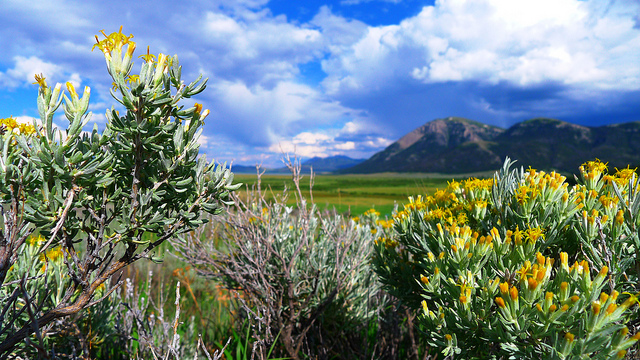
blooming horsebrush

Red Rock Lakes National Wildlife Refuge, MT